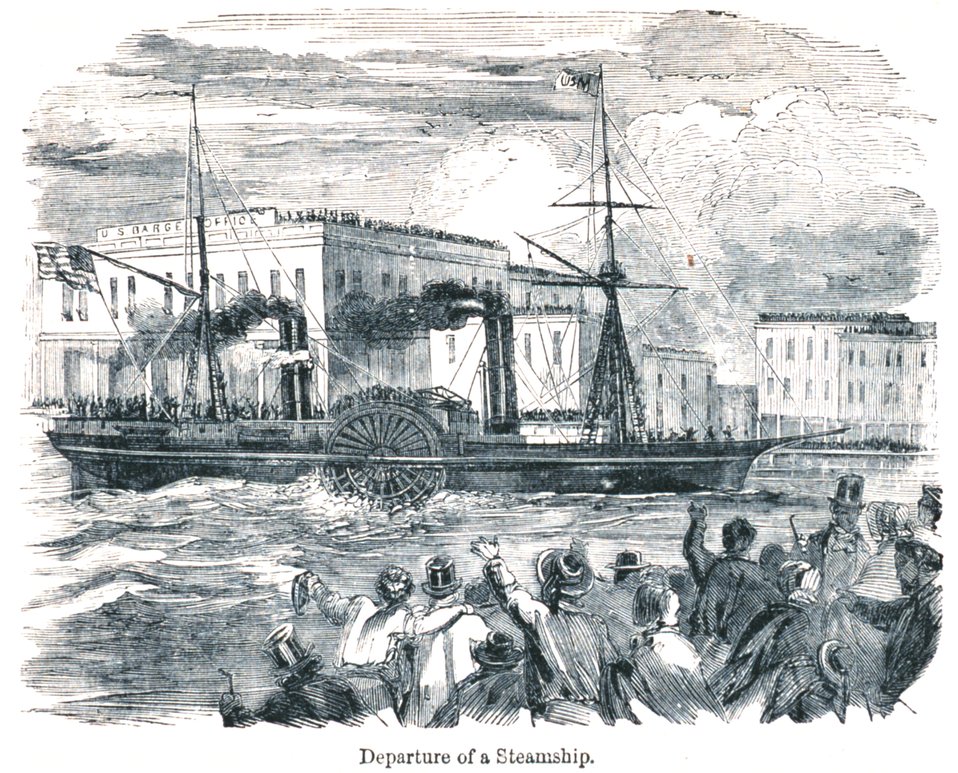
Departure of a steamship. In: 'The Annals of San Francisco'. Frank Soule, John Gihon, and James Nesbit. 1855. Page 626. D. Appleton & Company, New York. F869.S3.S7 1855.